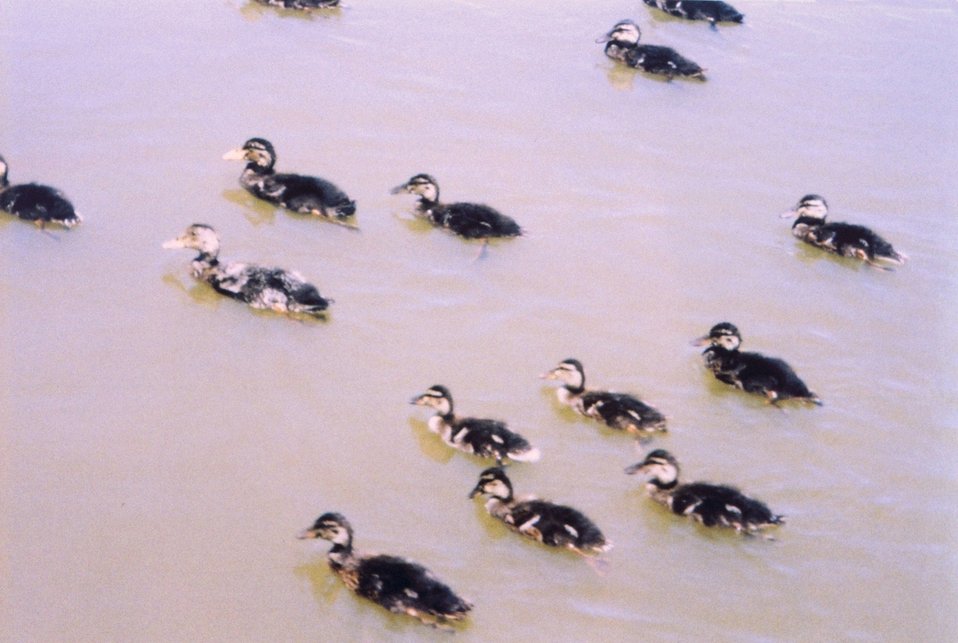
A flock of young mallards.